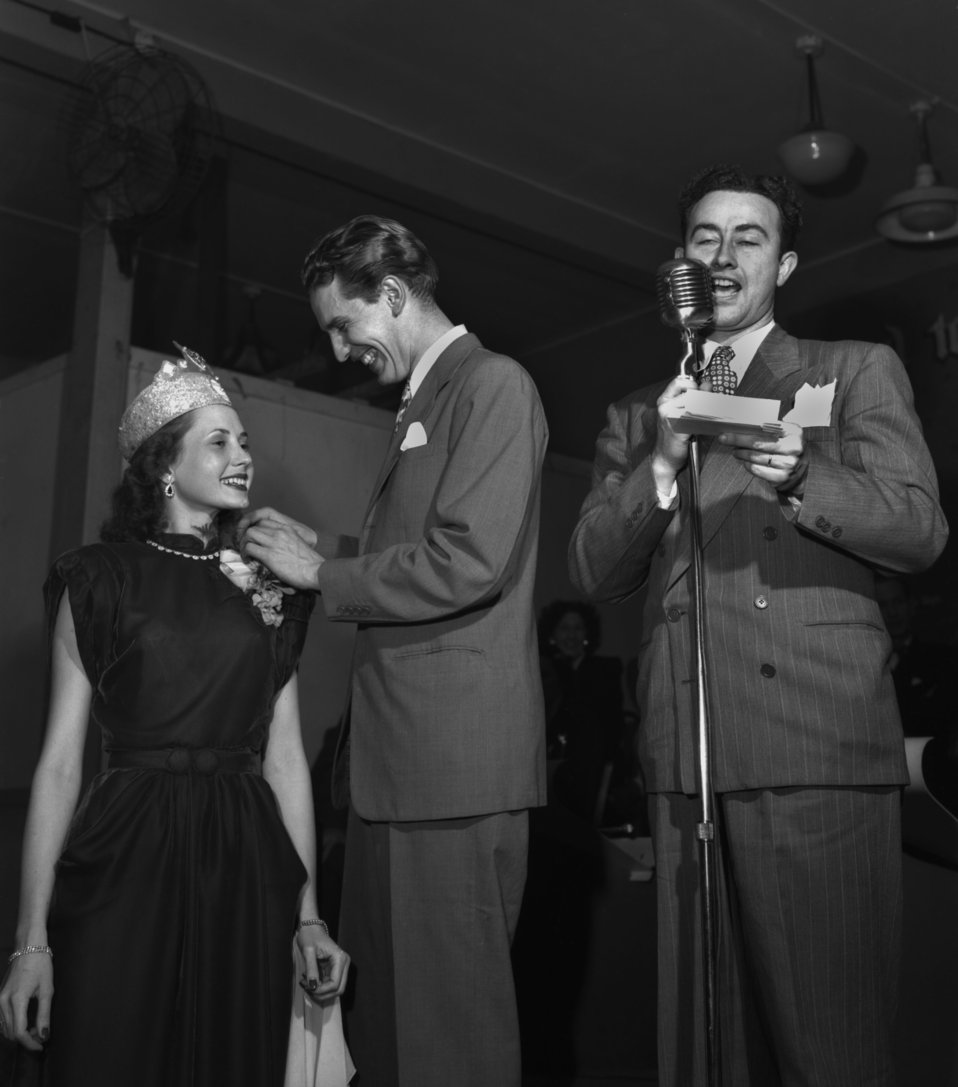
Miss Oak Ridge

4166-4 DOE photo Ed Westcott

Oak Ridge Tennessee 12-26-1947